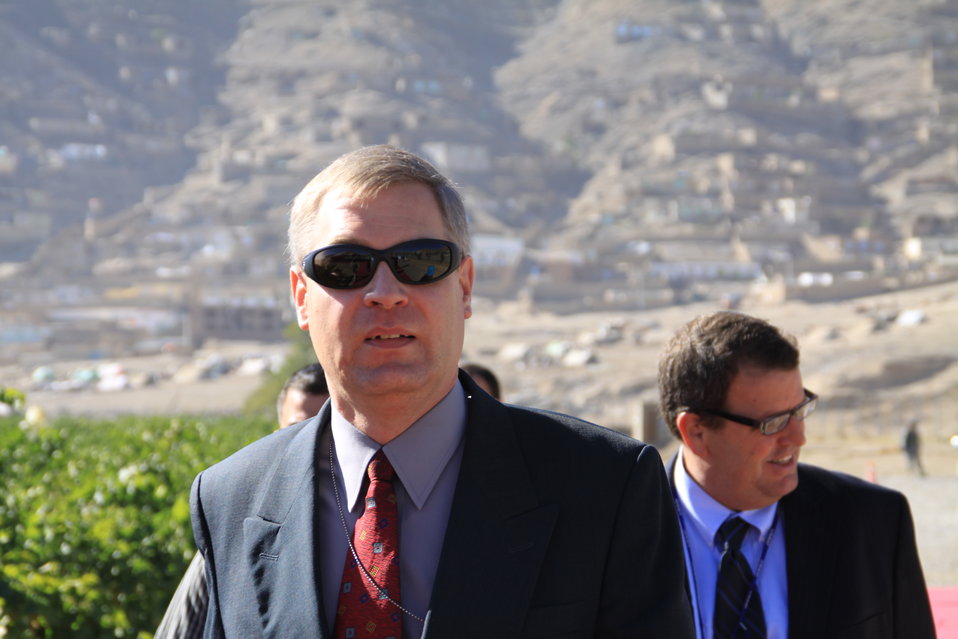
AVIPA Plus Wheat Seed Distribution 101005

US Ambassador Karl Eikenberry and USAID Acting Mission Director Kevin Brownawell joined the Minister of Agriculture, Irrigation and Livestock, H.E. Minister Mohammed Rahimi in signing a Memorandum of Understanding and distributing vouchers to area farmers for wheat and fertilizer.